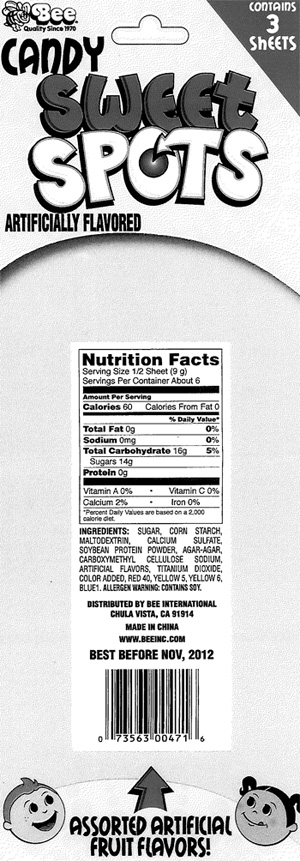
RECALLED – Candy “Sweet Spots”

December 12, 2013 – Product Recall – Bee International Issues Allergy Alert on Undeclared Egg in 'Sweet Spots'.